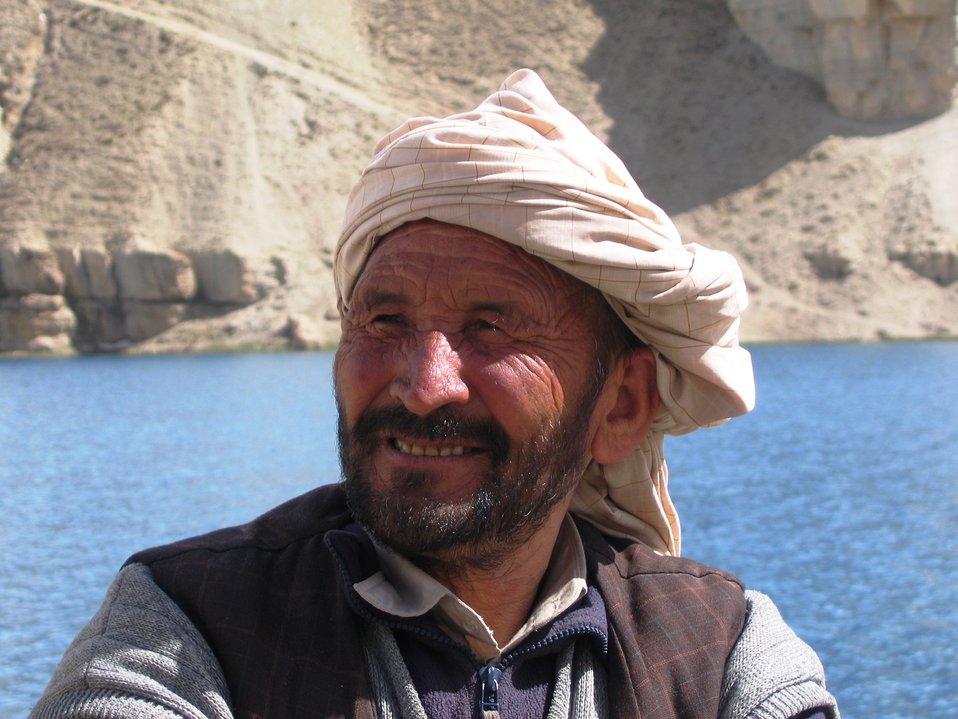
bamiyan 042908-oc 017

The beauty of the area’s six cobalt-blue Band-e-Amir lakes always stuns visitors to central Bamyan province. Natural travertine dams, created by calcium deposits over many years, support the lakes. They stretch across the valley in long graceful arcs, and merge into a strikingly beautiful landscape of stone, desert, and water. The vistas rival those of national parks anywhere in the world.
USAID, through its implementing partner the Wildlife Conservation Society (“WCS”), has been working since 2006 to develop the institutions and foster the consensus needed for the formation of a national park in the lakes area. The efforts ultimately resulted in the Earth Day declaration in 2009, of Band-e-Amir as Afghanistan’s first national park by the Director General of Afghanistan’s National Environmental Protection Agency (NEPA).
Afghanistan’s Environment Law requires local management of protected areas. To fulfill that mandate, WCS initially educated the residents in the 13 villages located within the territory of the park about the economic opportunities that national park status would provide. The Band-e-Amir Protected Area Committee (BAPAC) recruited villagers to be members. BAPAC and WCS jointly prepared a management plan for the park, and WCS assisted local officials in successfully navigating the national park proposal process.
With USAID support, WCS is now training rangers to protect the flora and fauna in the park, and is educating the provincial and national government officials who must manage park operations and ensure sustainability. WCS continues to help the government develop laws and policies on protected areas and species, and community-based natural resource management.
In anticipation of national park status, local entrepreneurs had already begun building small shops, restaurants, and hotels to serve tourists. USAID-funded partners provided guidance to help them place these structures away from the most ecologically sensitive areas. Now that the park has achieved official status and protection, the local people will have the opportunity to protect, preserve, and profit from this beautiful landscape.